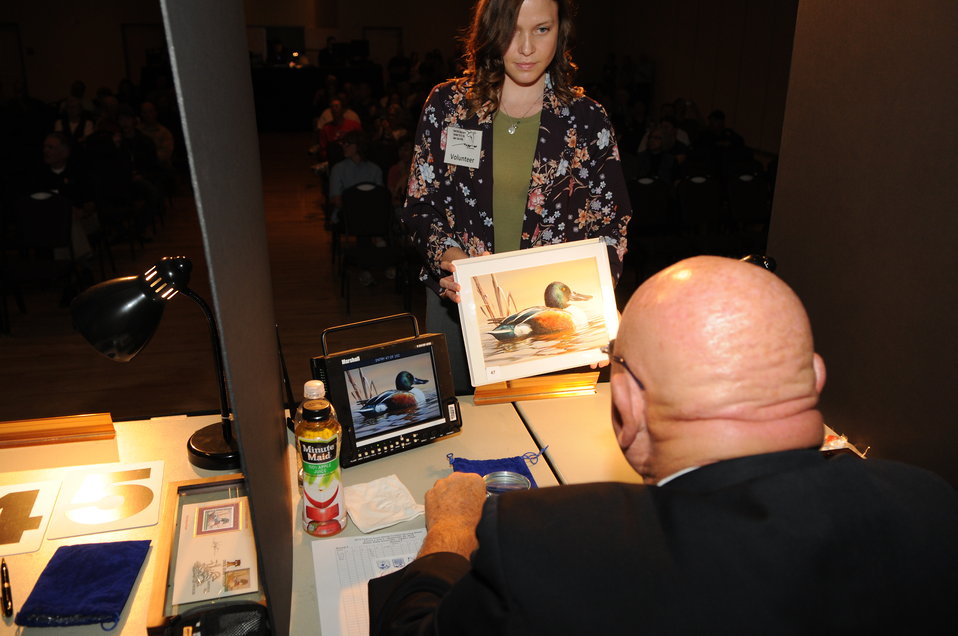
Judging

The U.S. Fish & Wildlife Service sponsored the 2012 Federal Duck Stamp Art Contest September 28 and 29 in Ogden, Utah, at Weber State University. A panel of five judges was responsible for choosing the art work used to design the 2013-2014 Migratory Bird Hunting and Conservation Stamp.